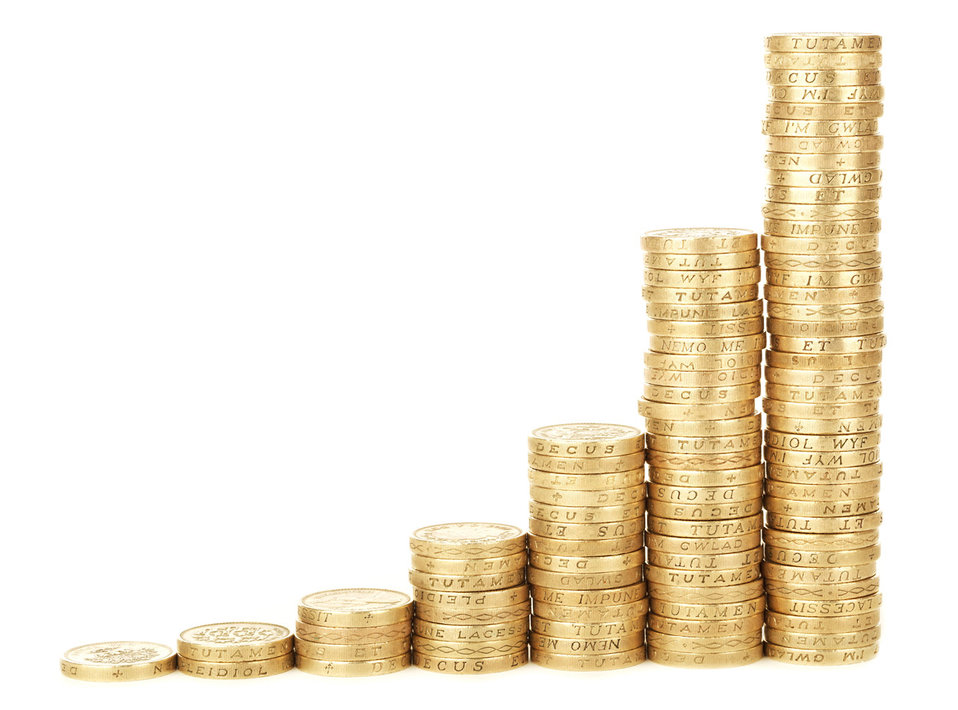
Coin graph

Graph made of golden coins isolated on white background.